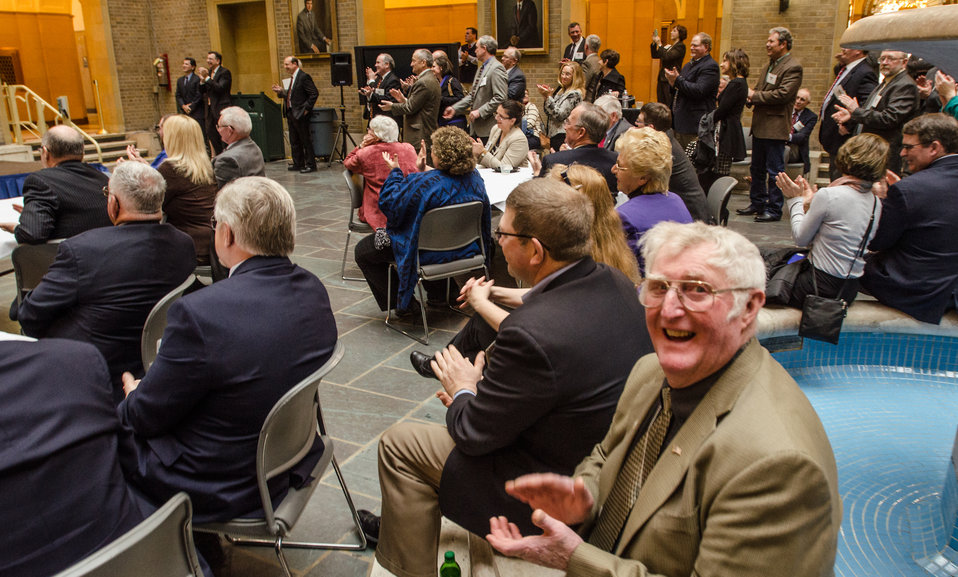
The audience applauds keynote speaker and former National Football League Pittsburgh Steelers halfback Robert Patrick 'Rocky' Bleier who spoke about the importance of milk in his childhood growth, and recounted some of his historic game-winning football play, during a luncheon with dairy producers, Dairy Management, Inc., (DMI) and other stakeholders from the dairy producers industry, at the Whitten Building Patio in Washington, D.C. on Tuesday, Feb. 26, 2013.